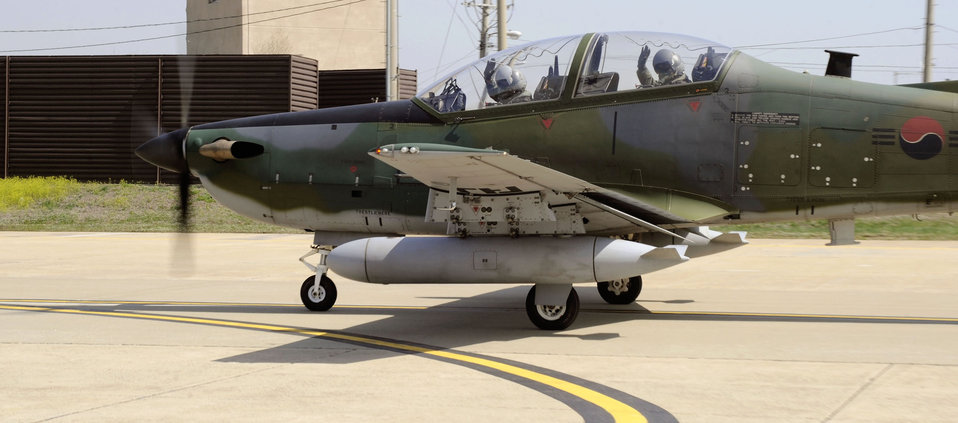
?Buddy Wing? wraps up at Osan

South Korean air force Maj. Jwa-Ryong Park and his co-pilot wave as they prepare to take off in a KA-1 aircraft April 15, 2010, at Osan Air Base, South Korea. Major Park is the 237th Tactical Fighter Squadron intelligence commander.